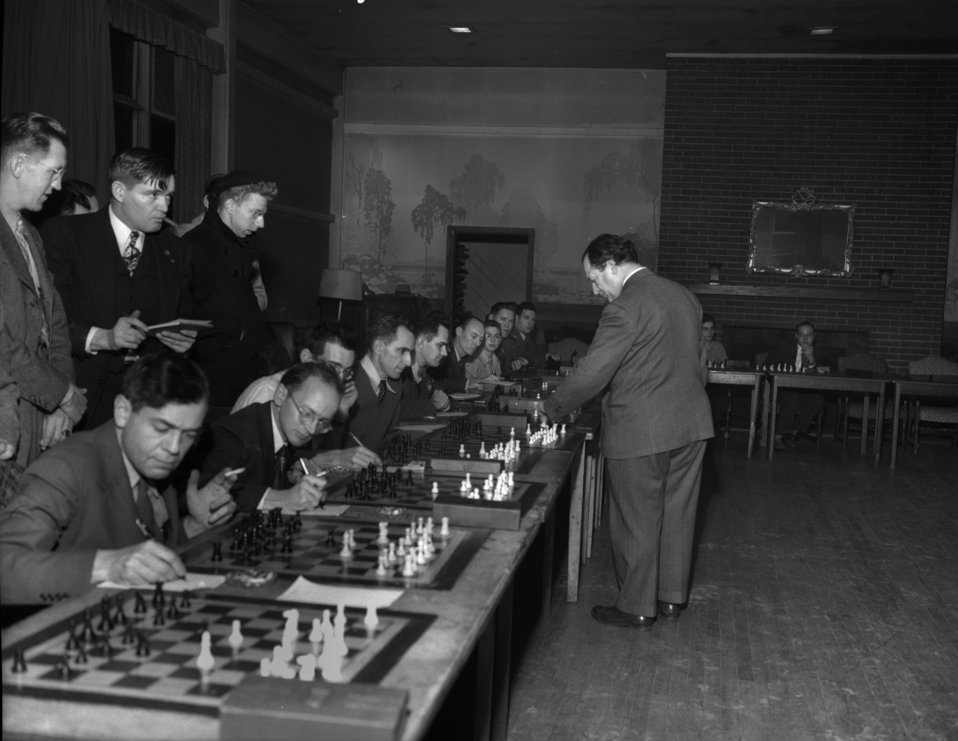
Chess expert George Koltanowski

4269b DOE photo by Ed Westcott
Oak Ridge Tennessee 1-26-1948